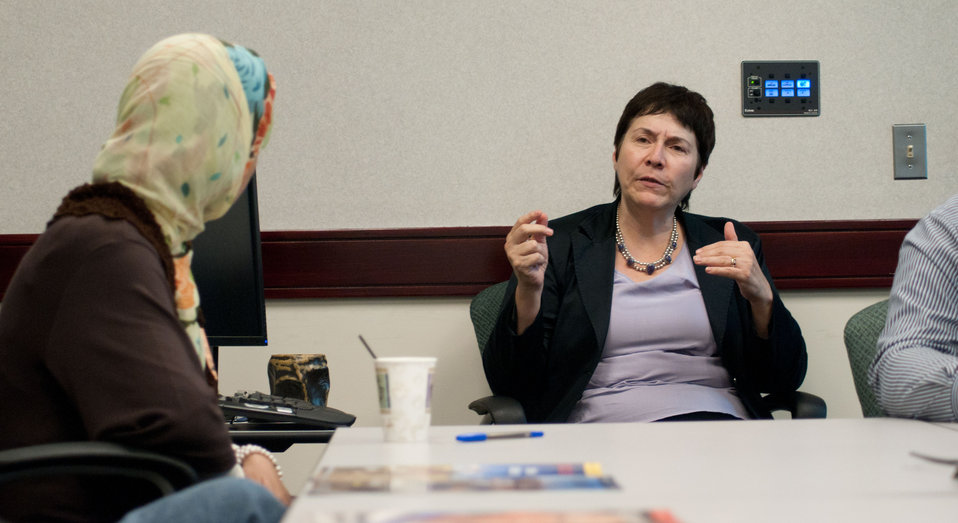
U.S. Department of Agriculture (USDA), Agriculture Research Service (ARS), International Research Programs’ Eileen Herrera (c.), talked about international partners finding and achieving mutual scientific objectives, with the Afghan Ministry of Agriculture's Borlaug Fellows at the George Washington Carver Center, in Beltsville, MD on Wednesday Sept. 21, 2011.